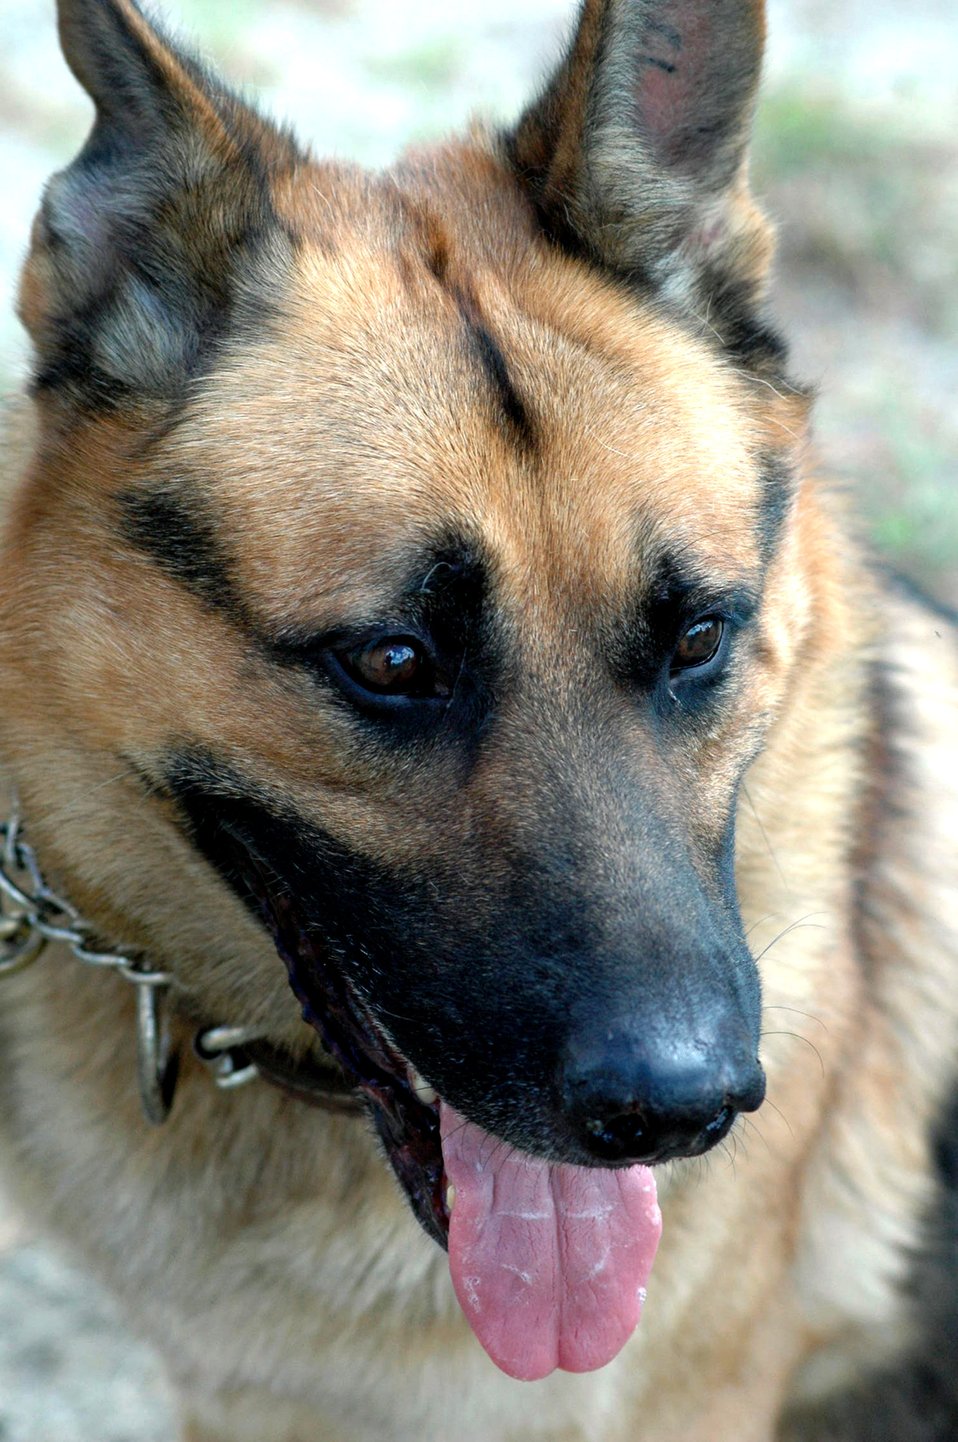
After one year, Phoenix Warrior course soaring high

Endy, an Air Force military working dog from the 319th Security Forces Squadron at Grand Forks Air Force Base, N.D., participates Aug. 28 in a scenario for Air Force Exercise Eagle Flag 07-6 at Naval Air Engineering Station Lakehurst, N.J. Endy, along with his handler, Staff Sgt. Andrew Goligowski, were Phoenix Warrior students participating in the exercise. The exercise is operated by the U.S. Air Force Expeditionary Center's 421st Combat Training Squadron from Fort Dix, N.J.